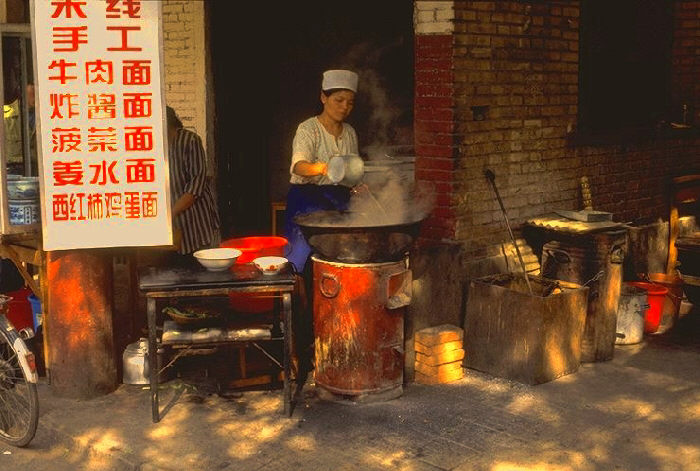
Woman cooking food at sidewalk in Xian.